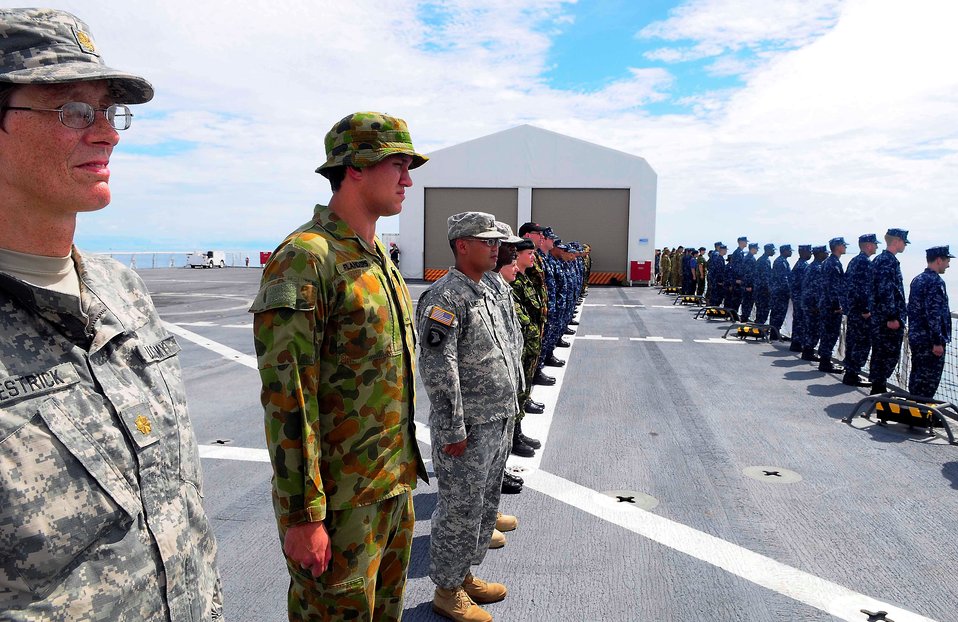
U.S. and Partner Nation Service Members Man the Rails

U.S. and partner nation service members assigned to the Military Sealift Command hospital ship USNS Mercy (T-AH 19) man the rails during a Pass and Review demonstration with the Japan Maritime Self Defense Force ship JDS Kunisaki (LST 4003), marking the completion of their collaborative efforts with Pacific Partnership 2010, on July 5, 2010. Mercy is conducting the fifth in a series of annual U.S. Pacific Fleet humanitarian and civic assistance endeavors to strengthen regional partnerships.